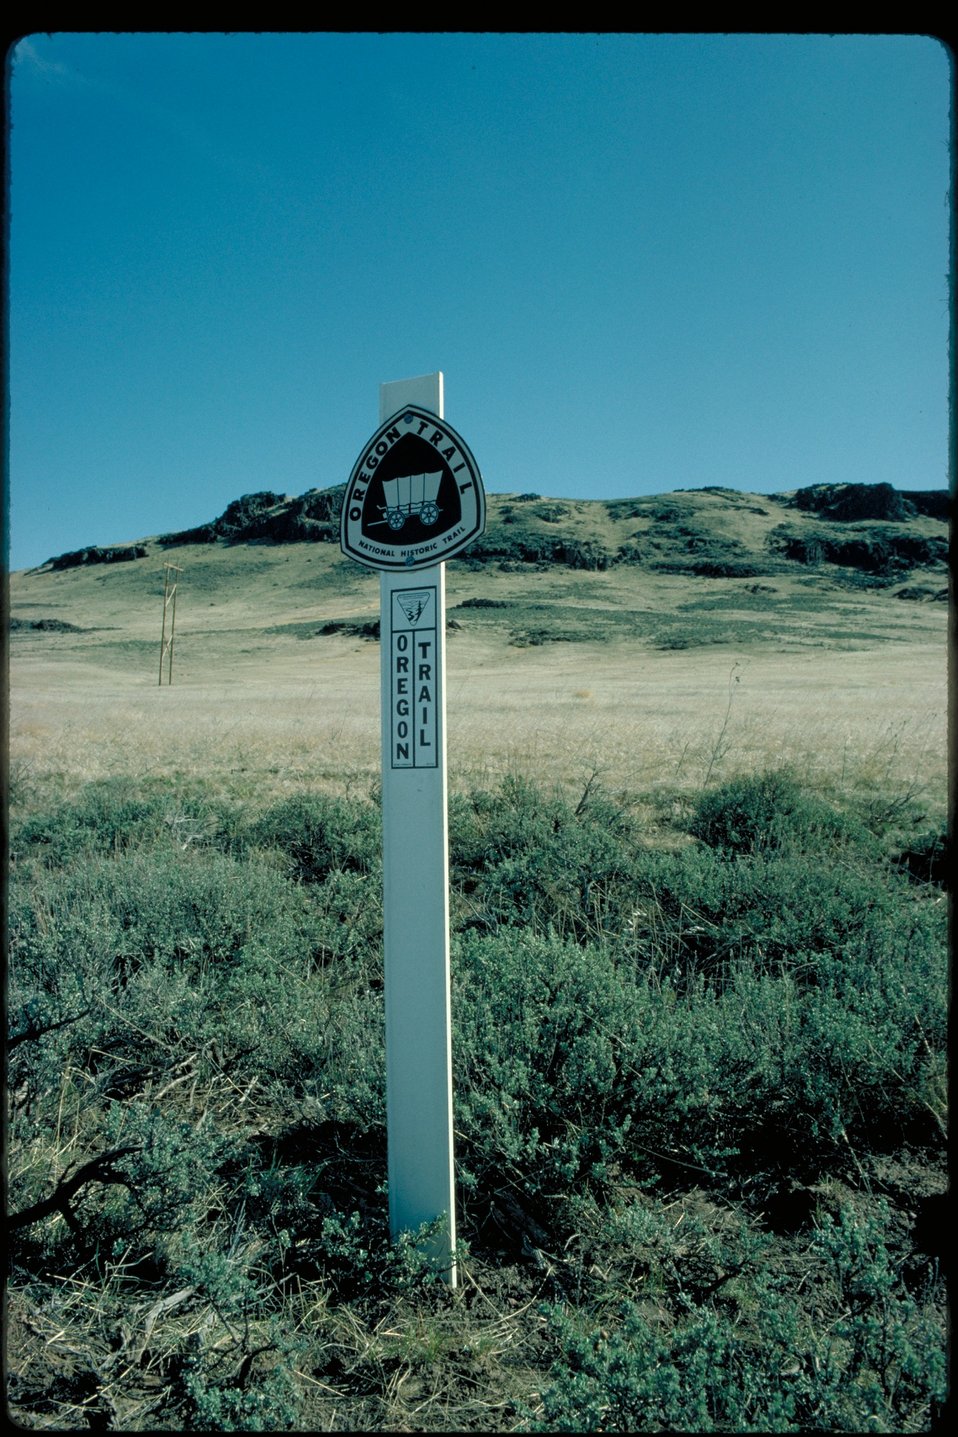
Oregon Trail marker near Teapot Dome Lower Snake River District